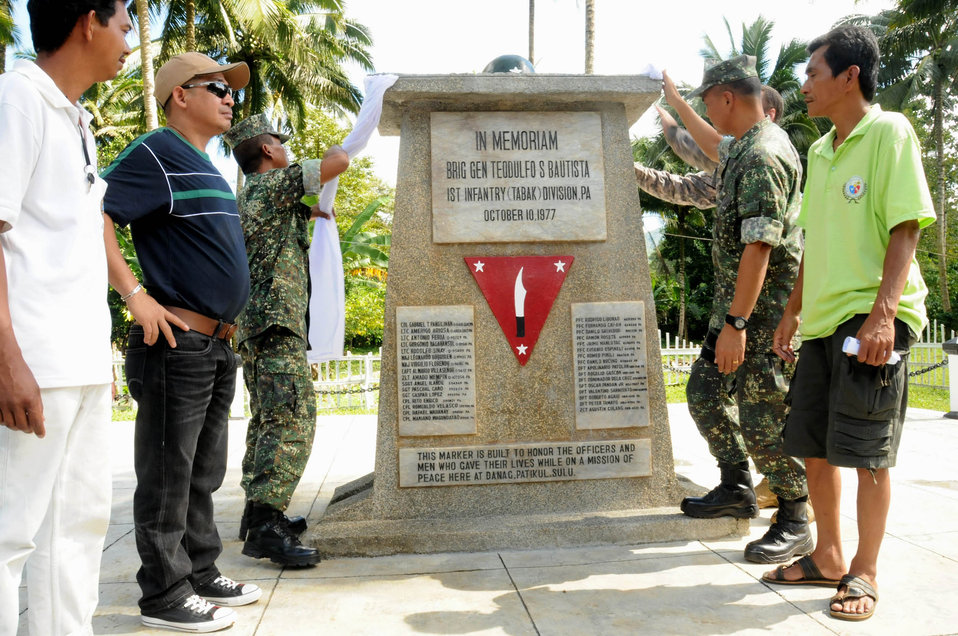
American servicemembers help restore shrine, provide medical care in Philippines

Sulu community leaders, members of the armed forces of the Philippines and Joint Special Operations Task Force-Philippines American servicemembers unveil a shrine Nov. 28, 2009, in Patikul, Philippines. The stone shrine is a tribute to AFP Brig. Gen. Teodulfo Bautista and his 34 men who were killed Oct. 10, 1977, while attempting to conduct peace talks.